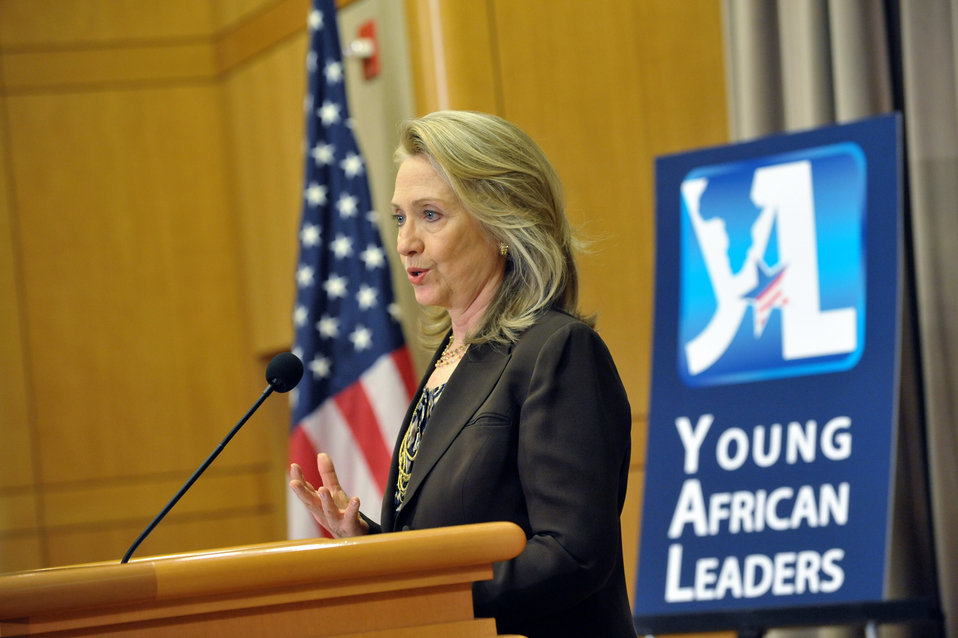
Secretary Clinton Delivers Remarks at the Innovation Summit and Mentoring Partnership with Young African Leaders

U.S. Secretary of State Hillary Rodham Clinton delivers remarks at the Innovation Summit and Mentoring Partnership with Young African Leaders at the Department of State in Washington, D.C. on June 13, 2012.